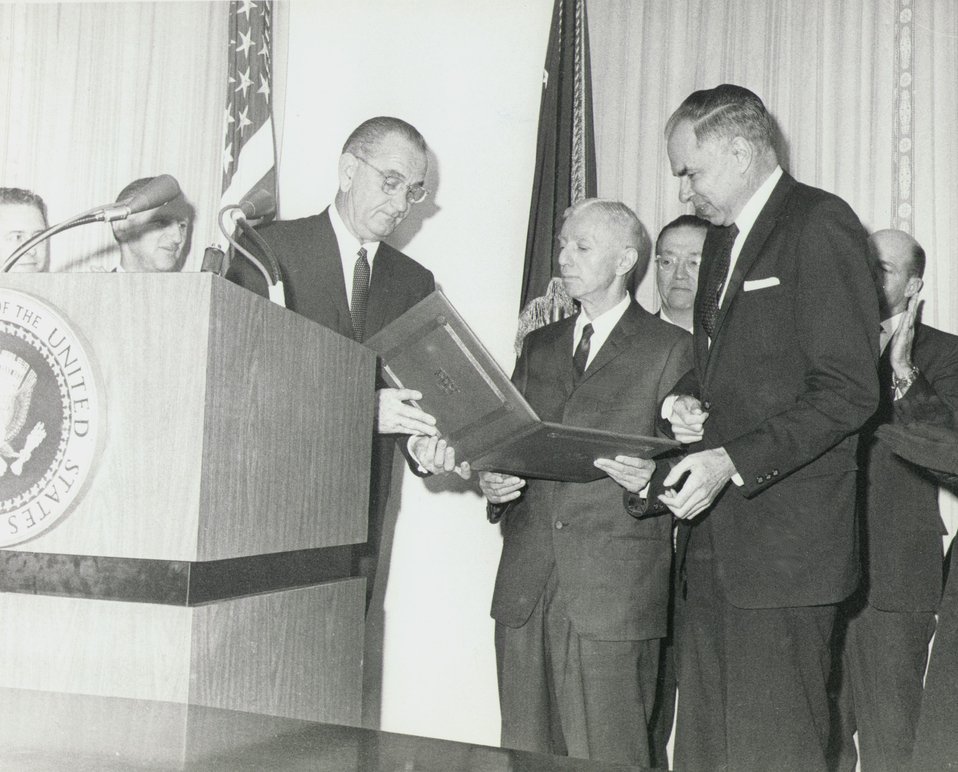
Fermi Award. Recipient: Rickover. Date: 1964.